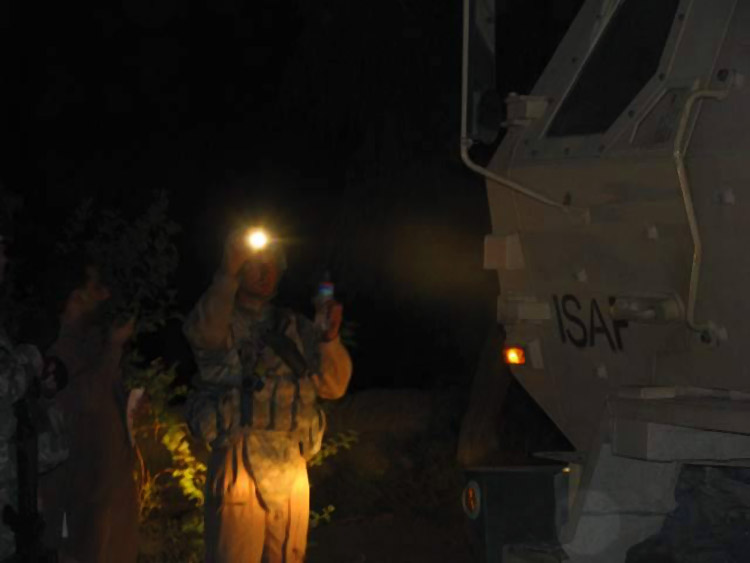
Airmen deliver aid to flood victims in Afghanistan

Tech. Sgt. Jason Williams guides in a Mine Resistant Ambush Protected vehicle during a delivery of emergency humanitarian assistance supplies July 3 to residents of the Kuz Kunar and Dari Noor districts of Nangarhar Province, Afghanistan. American servicemembers of the Nangarhar Provincial Reconstruction Team pitched in at the request of the United Nations Assistance Mission in Afghanistan after flash floods struck the area June 30. Sergeant Williams is a Nangarhar Provincial Reconstruction Team mechanic.